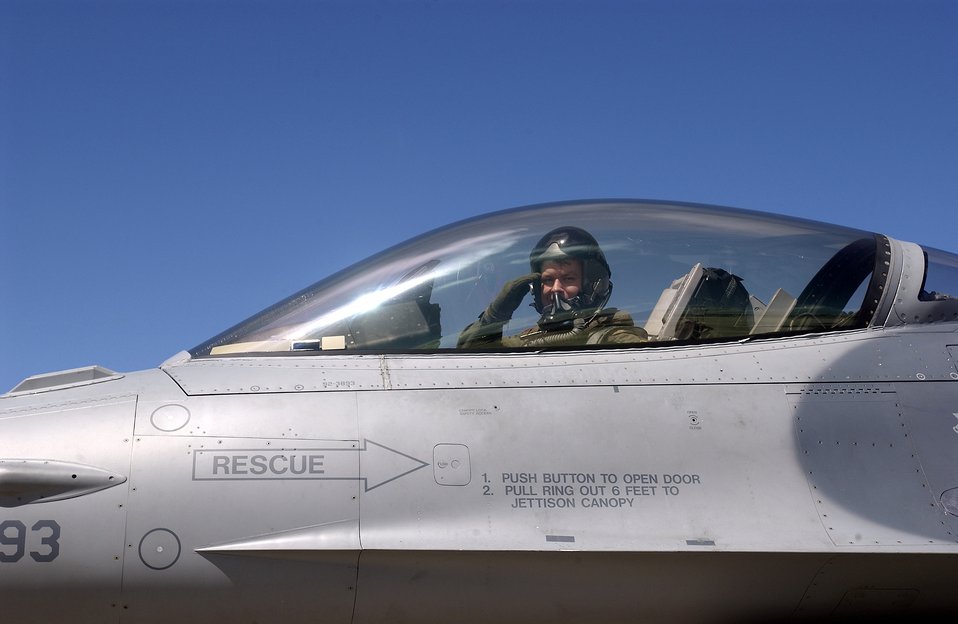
Valiant Shield kicks off

Capt. Eric Freienmuth salutes after landing following a training sortie for Valiant Shield 2006 at Andersen Air Force Base, Guam, on Monday, June 19. Valiant Shield focuses on integrated joint training and interoperability among U.S. military forces while responding to a range of mission scenarios. Captain Freienmuth is assigned to the 13th Fighter Squadron at Misawa Air Base, Japan.